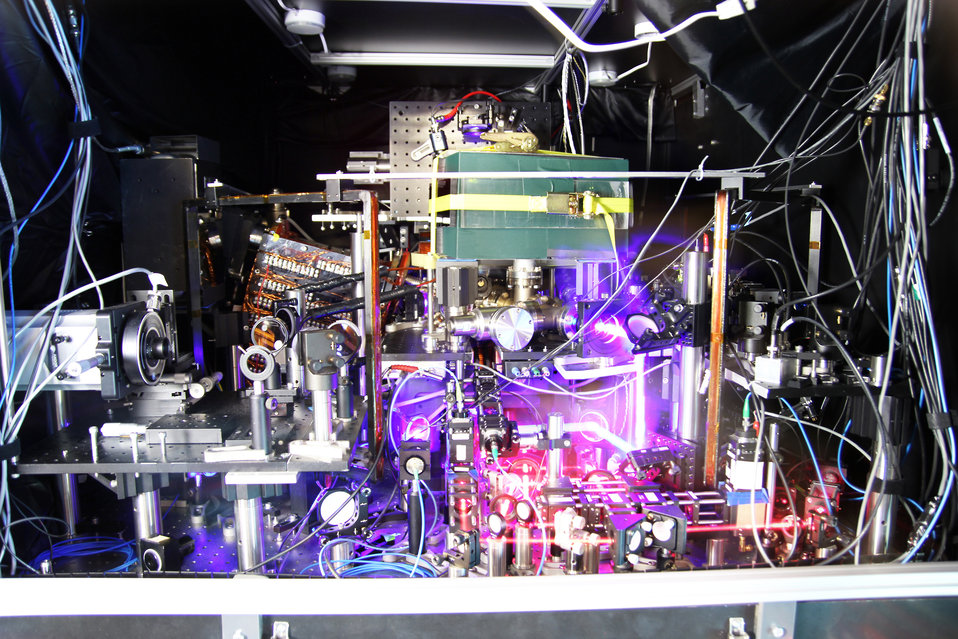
Strontium Clock

JILA's experimental atomic clock based on strontium atoms held in a lattice of laser light is the world's most precise and stable atomic clock. The image is a composite of many photos taken with long exposure times and other techniques to make the lasers more visible.

See also www.nist.gov/pml/div689/20140122 strontium.cfm

Credit: Ye group and Baxley/JILA